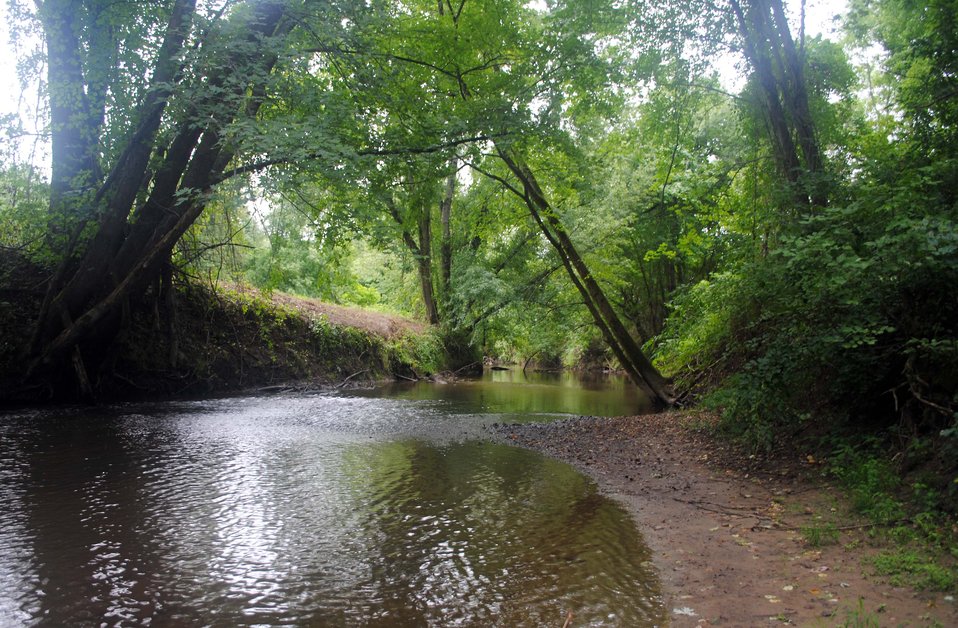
Fort River Division of the Silvio O. Conte National Wildlife Refuge, Hadley, MA.